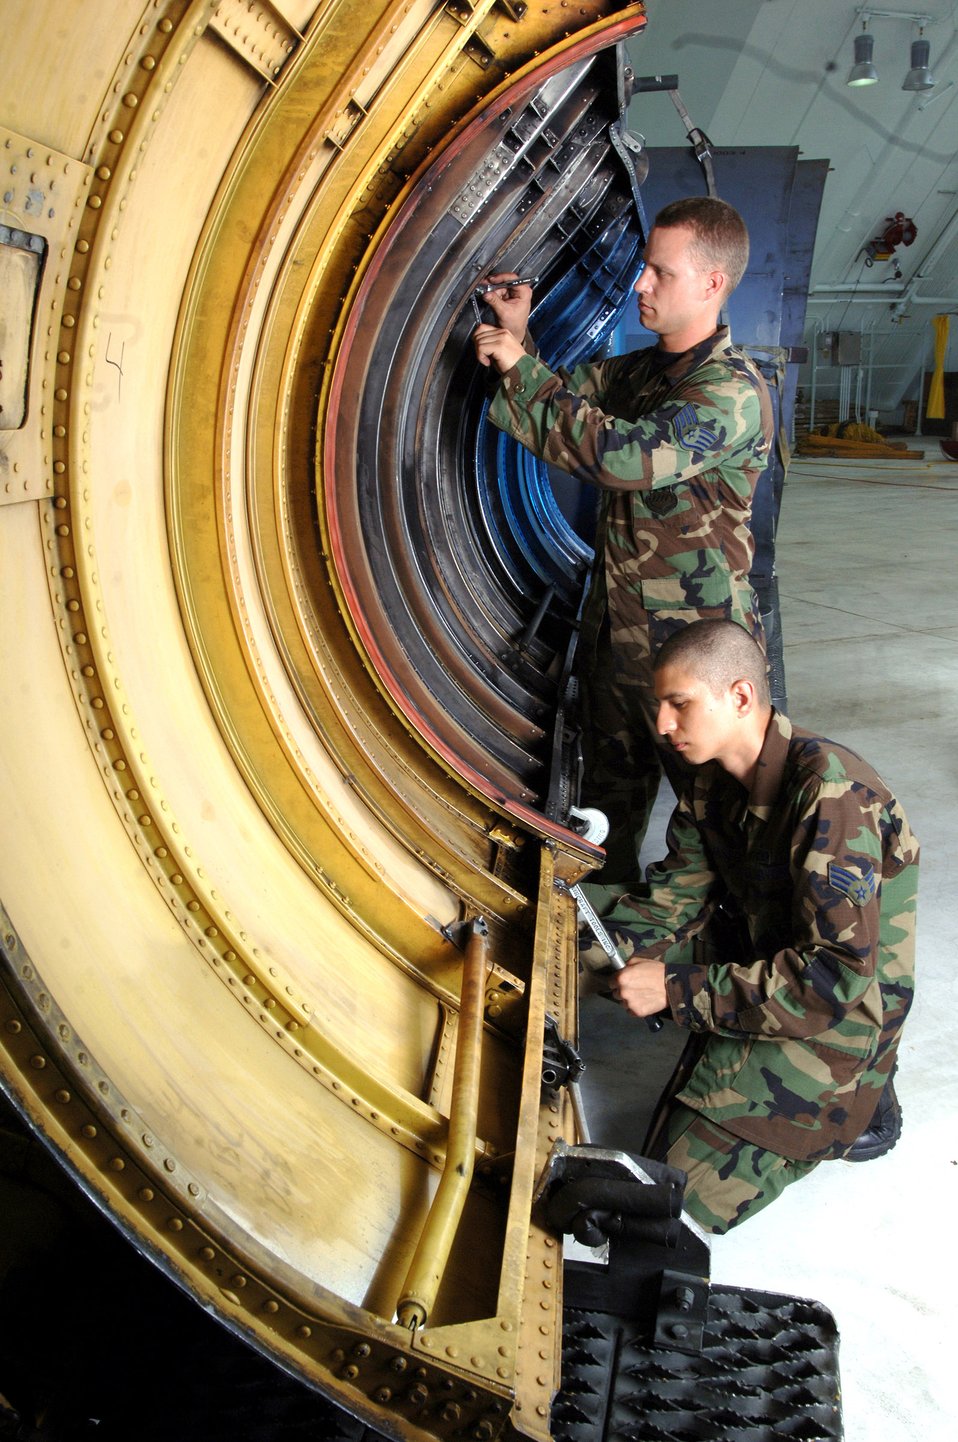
Strato work

ANDERSEN AIR FORCE BASE, Guam (AFPN) -- Staff Sgt. Matthew Foley (back) and Senior Airman Mario Jasso repair the body-cowling rib of a B-52 Stratofortress aircraft here. The Airmen are structural maintenance technicians with the 2nd Maintenance Squadron at Barksdale Air Force Base, La.